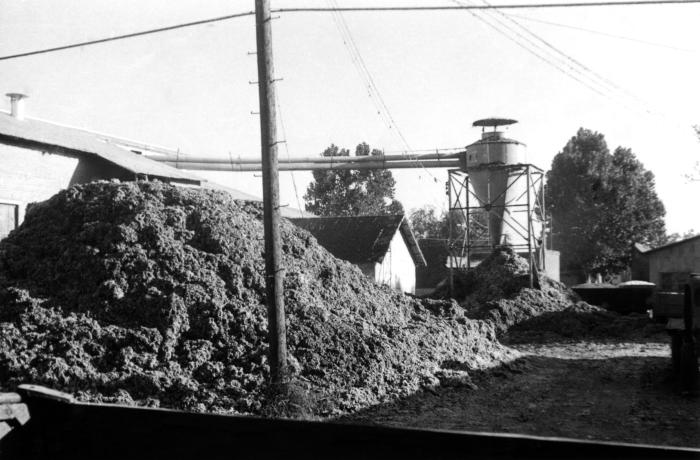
This 1952 historical photograph was provided by the Center for Disease Control's (CDC), National Institute for Occupational Safety and Health (NIOSH), and depicted what appeared to be an agricultural processing plant stocked with raw, unrefined material, which had been arranged in large piles alongside the plant. This image was part of a collection that was used to document the many aspects of various industrial activities, so as to better understand these workplace environments, and their associated hazards. In gaining a better understanding of workplace hazards, protocol-formulating bodies such as NIOSH, are better able to create a safer workplace through substantiation of appropriate safety regulations.